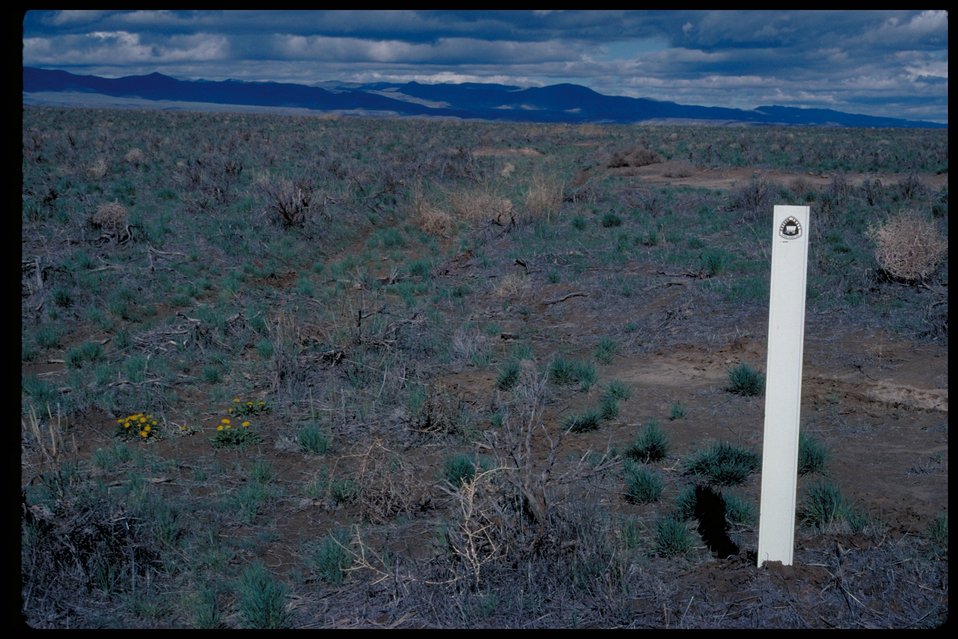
Oregon Trail east of Murphy Lower Snake River District